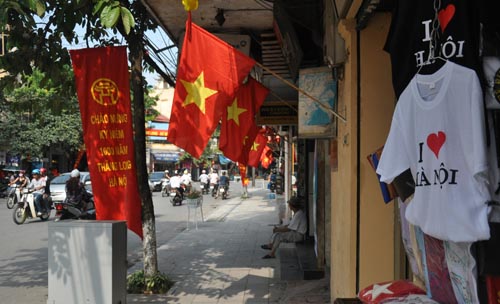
T-Shirtsgo on sale for Hanoi's 1000th anniversary celebrations as capital of Vietnam.